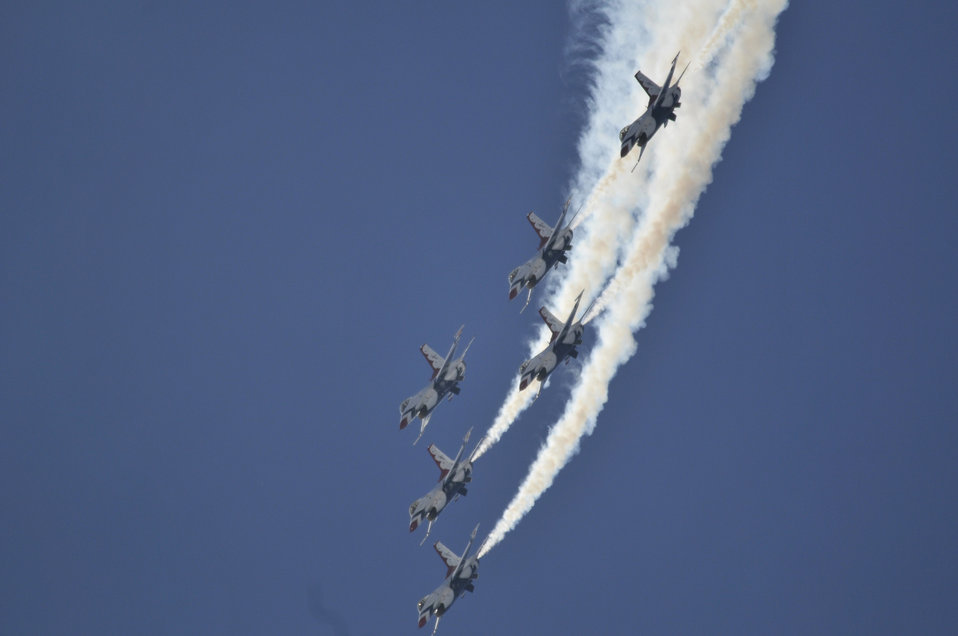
AirFest 2010

The U.S. Air Force air demonstration team, the Thunderbirds, perform precision aerial maneuvers Nov. 6, 2010, during AirFest 2010 at Lackland Air Force Base, Texas.